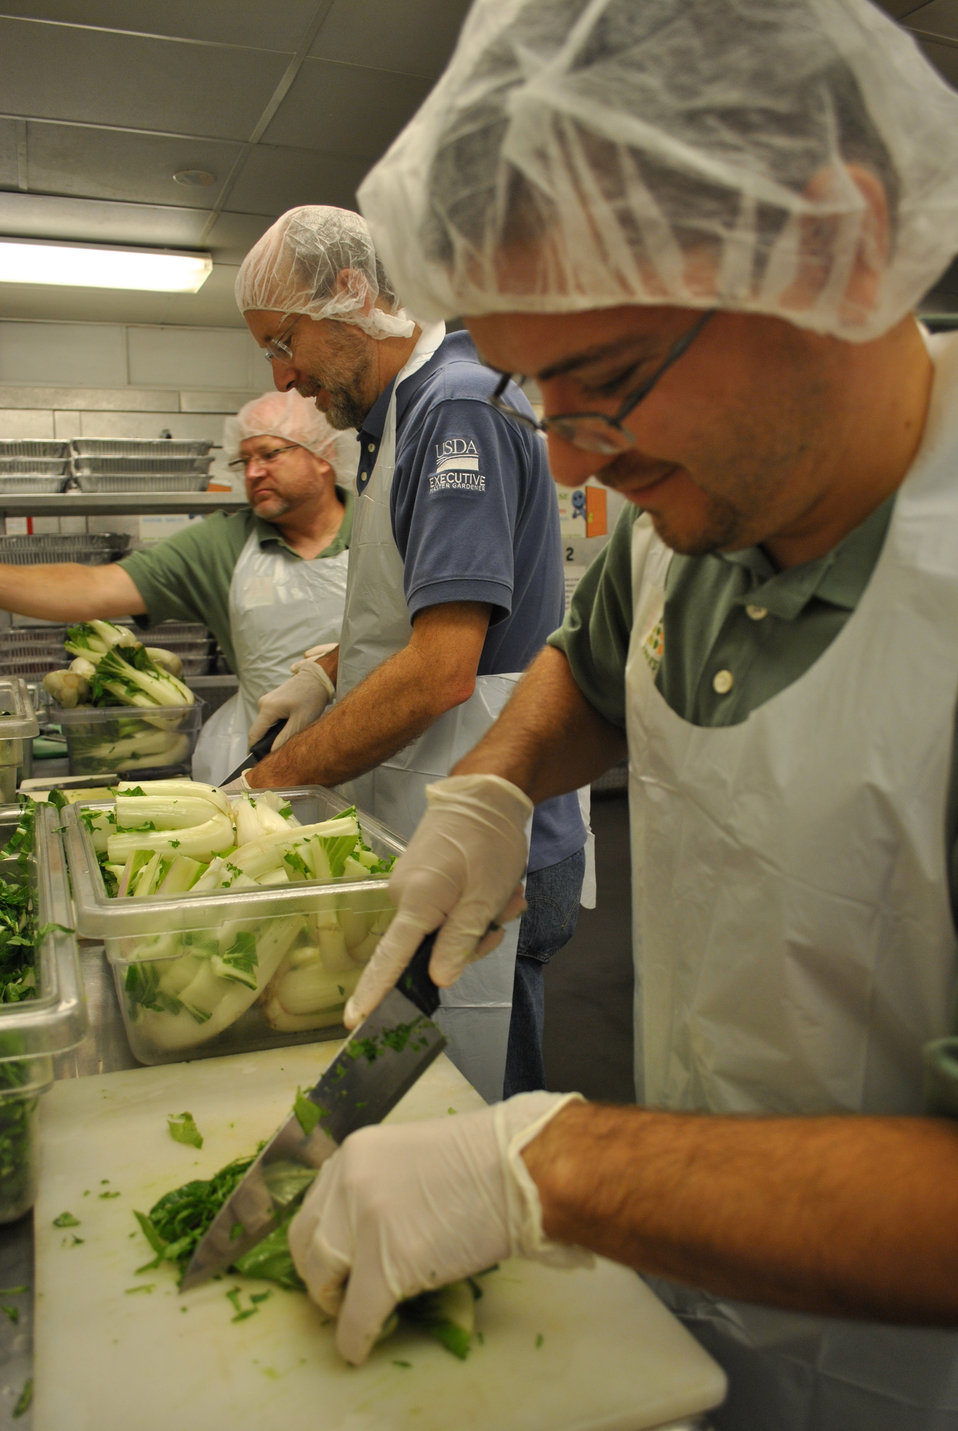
(L to R) DC Central Kitchen in Washington, D.C. Rich Holcomb employee, U.S. Department of Agriculture (USDA) National Agricultural Statistics Service (NASS) Brian Lounsbury, and USDA National Institute of Food and Agriculture (NIFA) Dewell Delgado Paez chop bok choy that was grown at USDA headquarters Peoples Garden in Washington, D.C. The threesome was dubbed the “best bok choy choppers ever” by the DC Central Kitchen staff.